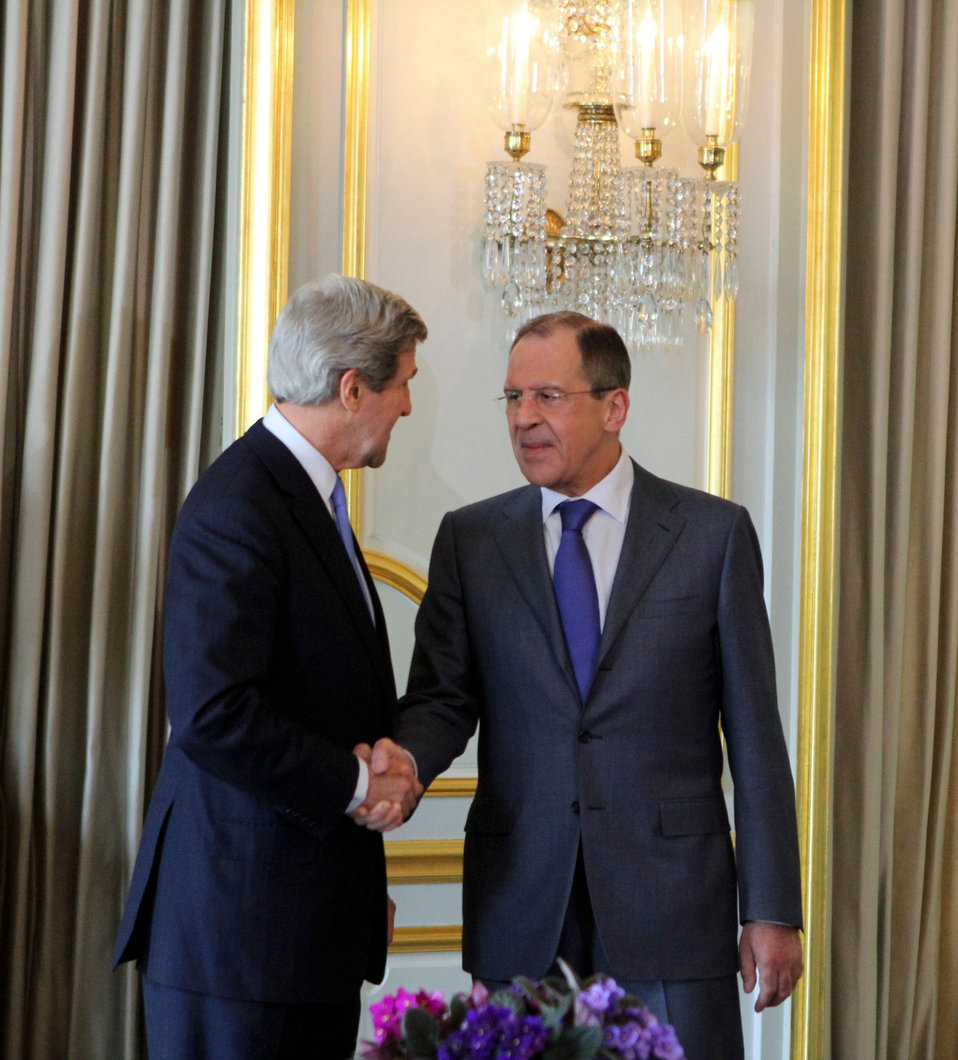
Secretary Kerry Shakes Hands With Russian Foreign Minister Lavrov

U.S. Secretary of State John Kerry meets with Russian Foreign Minister Sergey Lavrov at the Winfield House, the residence of the U.S. Ambassador, in London, United Kingdom, April 10, 2013.